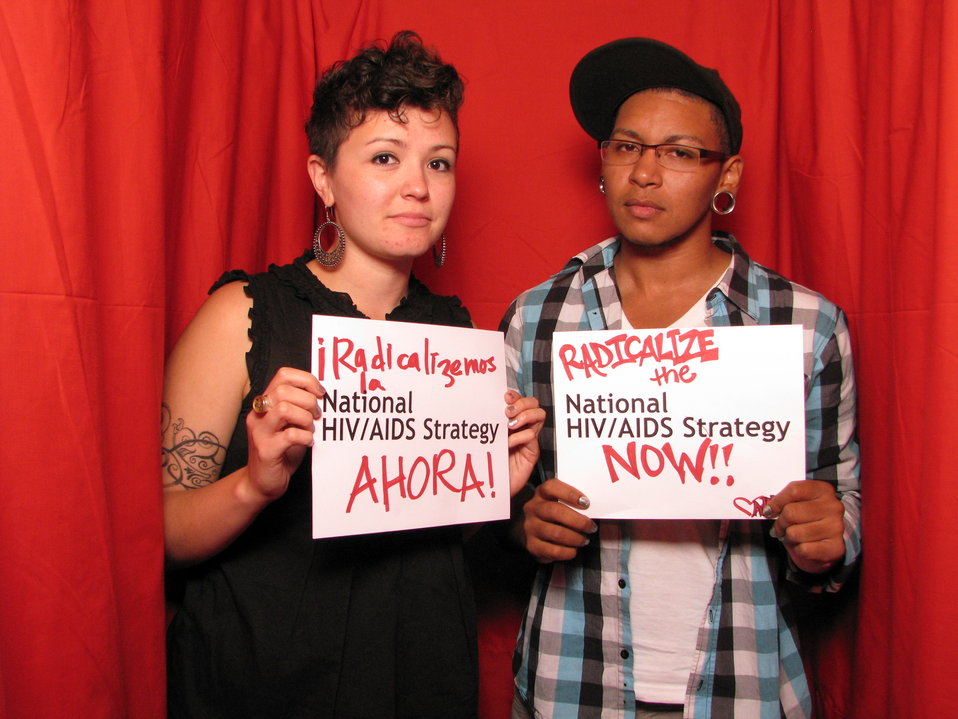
Radicalizemos la National HIV/AIDS Strategy AHORA! Radicalize the National HIV/AIDS Strategy NOW!!

From the AIDS.gov photo booth at the U.S. Conference on AIDS, September 2010 (Orlando, FL).